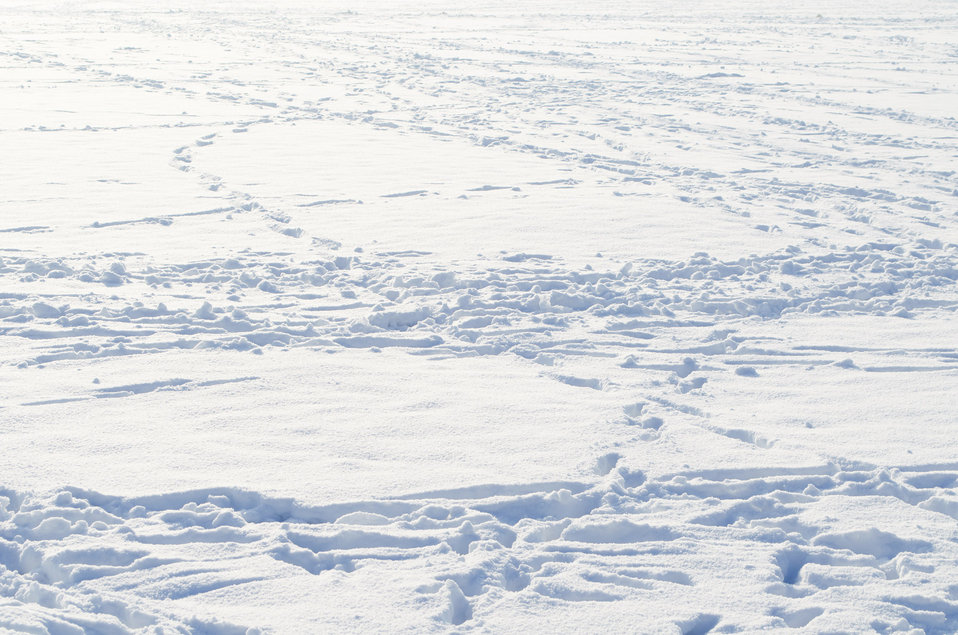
Snow background 3.